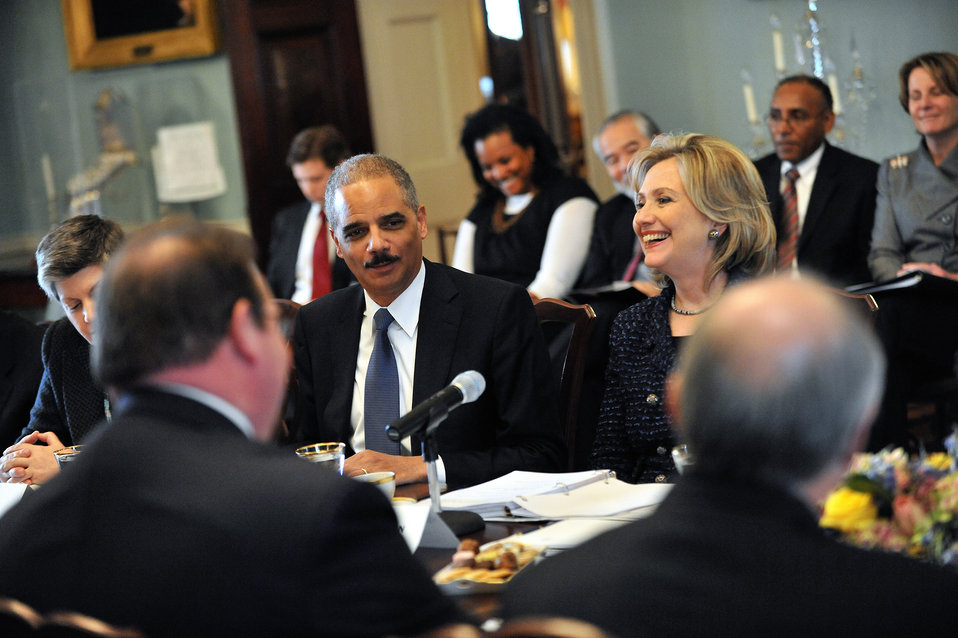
Attorney General and Secretary Clinton Share a Laugh

U.S. Attorney General Eric H. Holder, Jr., left, and U.S. Secretary of State Hillary Rodham Clinton, right, share a laugh at the annual meeting of the President's Interagency Task Force To Monitor and Combat Trafficking in Persons at the U.S. Department of State in Washington, D.C., on February 1, 2011.